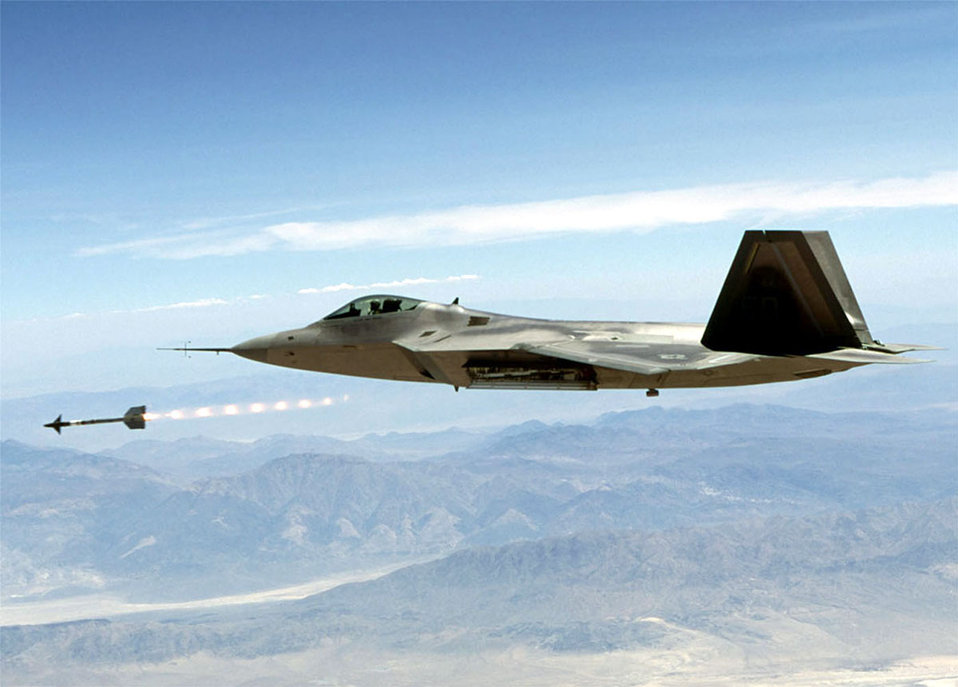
Missile away!

EDWARDS AIR FORCE BASE, Calif. -- An AIM-9 Sidewinder missile successfully launches from an F/A-22 Raptor during a launch test. The major milestone test evaluated the next-generation fighter's ability to fire an air-to-air missile from an internal weapons bay. Its primary air-to-air role, the F/A-22 will carry six AIM-120C and two AIM-9 missiles. For its air-to-ground role, the F/A-22 can internally carry two 1,000 pound-class Joint Direct Attack Munitions, two AIM-120C, and two AIM-9 missiles.